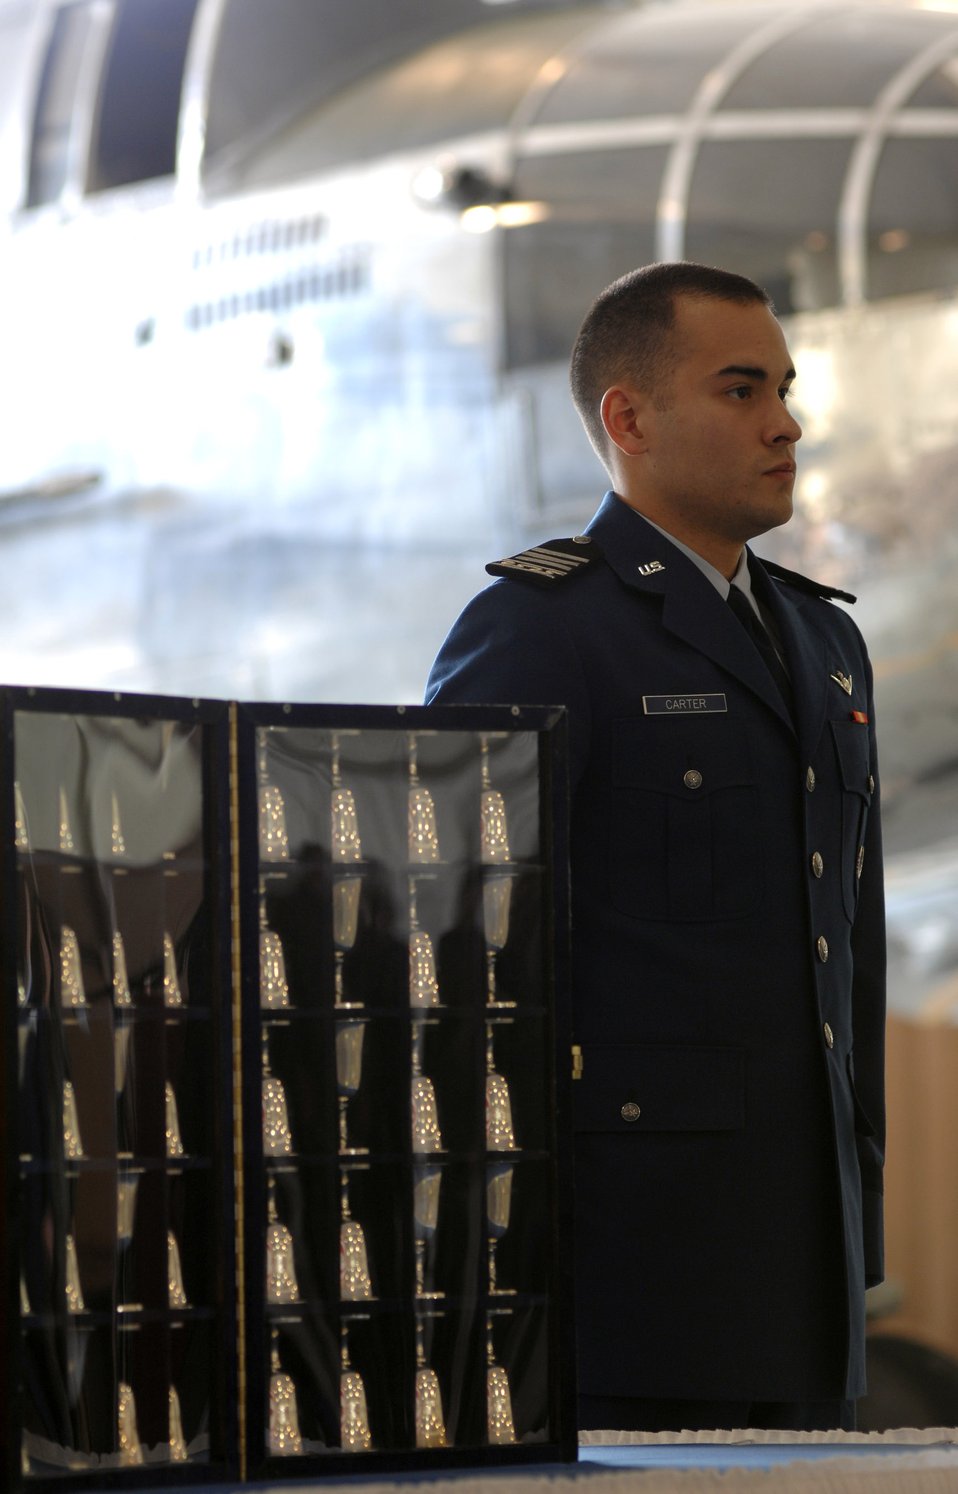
Doolittle Raiders 65th anniversary kicks off

Cadet 1st Class Michael Carter guards over the Doolittle Tokyo Raiders Silver Goblets during a ceremony honoring the raiders and celebrating the 65th Anniversary of the raid April 17 at Randolph Air Force Base, Texas. There are 80 goblets representing all 80 Doolittle raiders. When a raider dies, his goblet is turned over in the case. There are 14 surviving raiders.